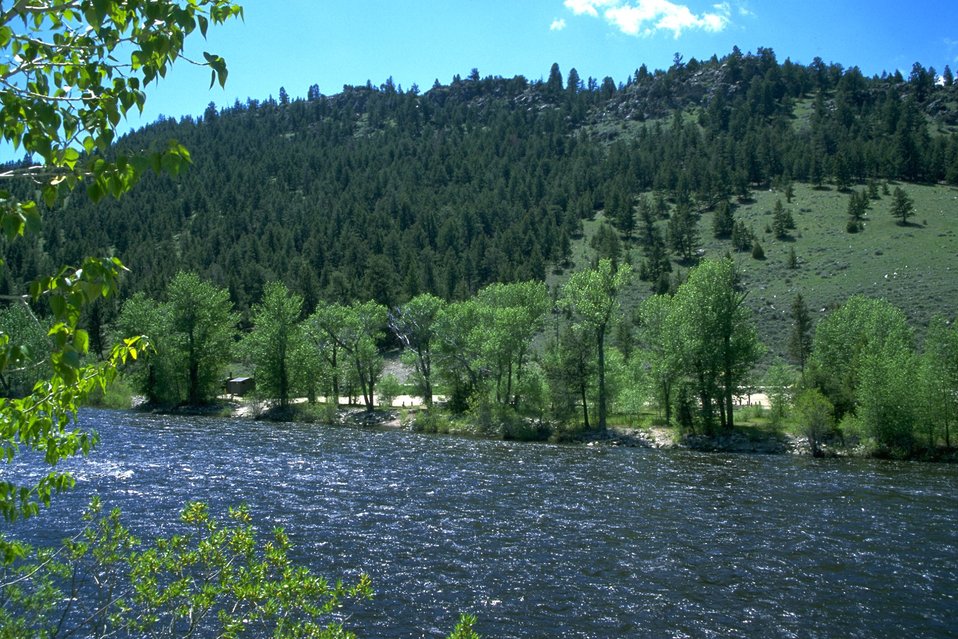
View of the Divide Day Use Area from across the Big Hole River